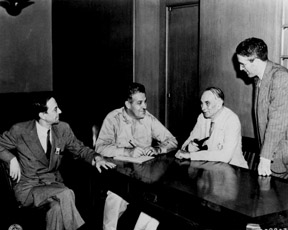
Scientific advisories consult with Major General Leslie R. Groves, Officer in Charge of Manhattan Engineer District.